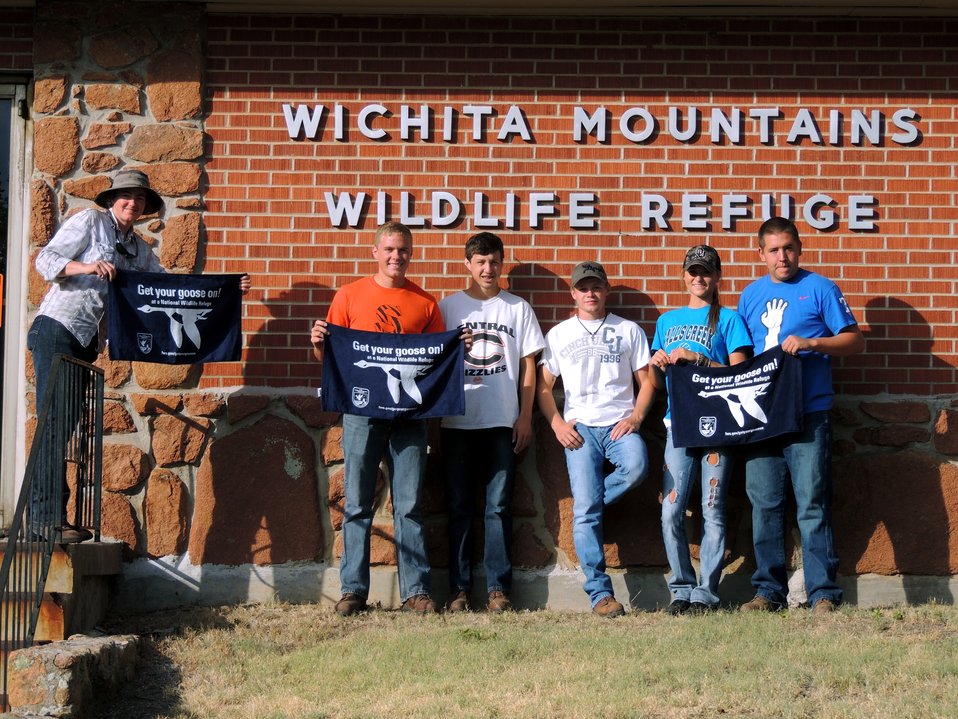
Get Your Goose On!

Wichita Mountains National Wildlife Refuge in Oklahoma.